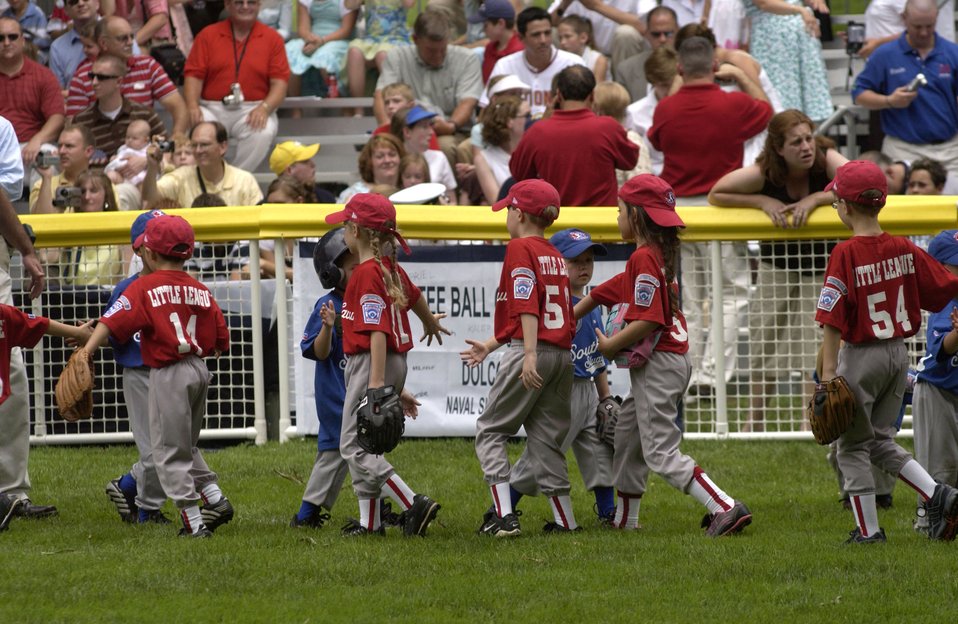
Tee ball on the South Lawn

The Little League Yankees, in red, of McGuire Air Force Base, N.J., shake hands with the Dolcom Little League Indians of Naval Submarine Base New London, Groton, Conn., at the conclusion of their game on Friday, June 23. The game, marking the official start of the Little League season, was played on the South Lawn of the White House with President George W. Bush reciting the Little League Pledge with the teams. The two teams were randomly picked for this annual event.